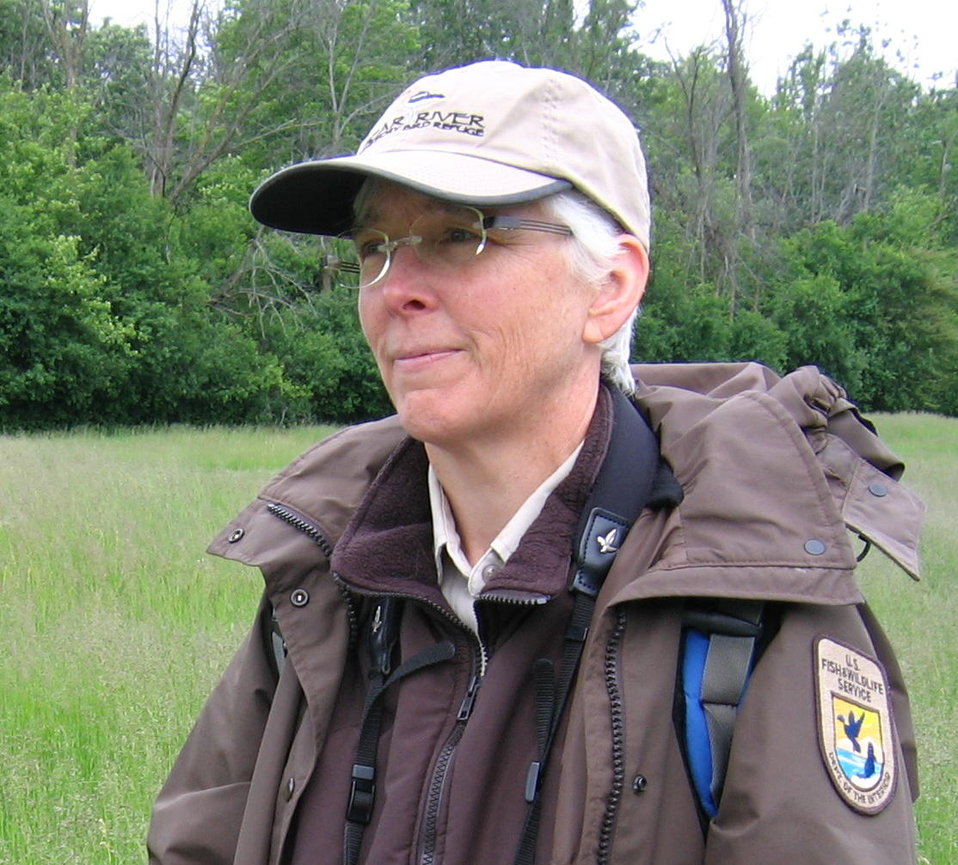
Lisa Williams

Science Leadership Award – 2013

Dr. Lisa Williams completing survey work at Shiawassee National Wildlife Refuge.